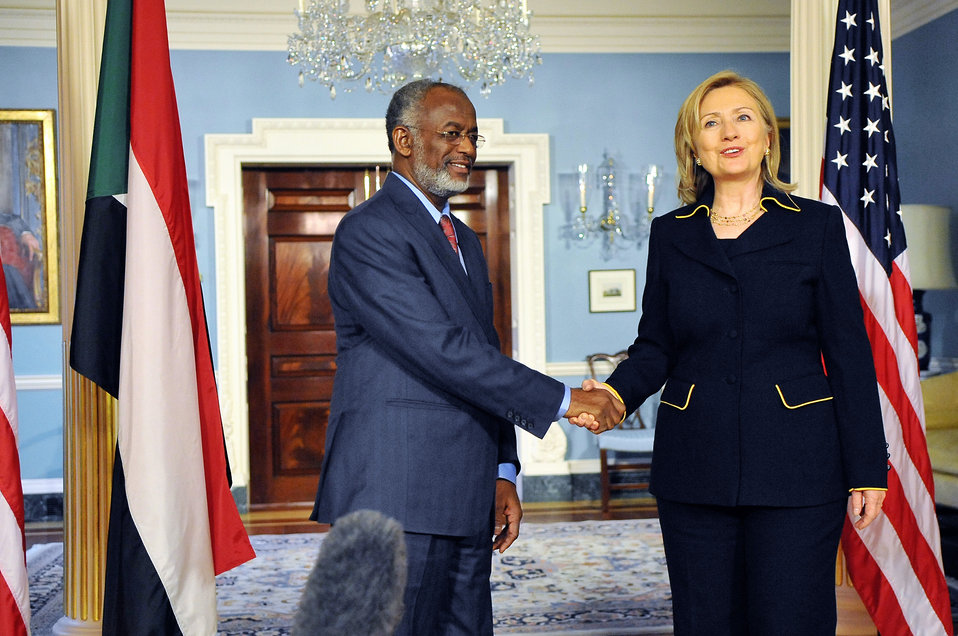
Secretary Clinton Shakes Hands With Sudanese Foreign Minister Karti

U.S. Secretary of State Hillary Rodham Clinton shakes hands with Sudanese Foreign Minister Ahmen Ali Karti at the U.S. Department of State in Washington, D.C., on January 26, 2011.